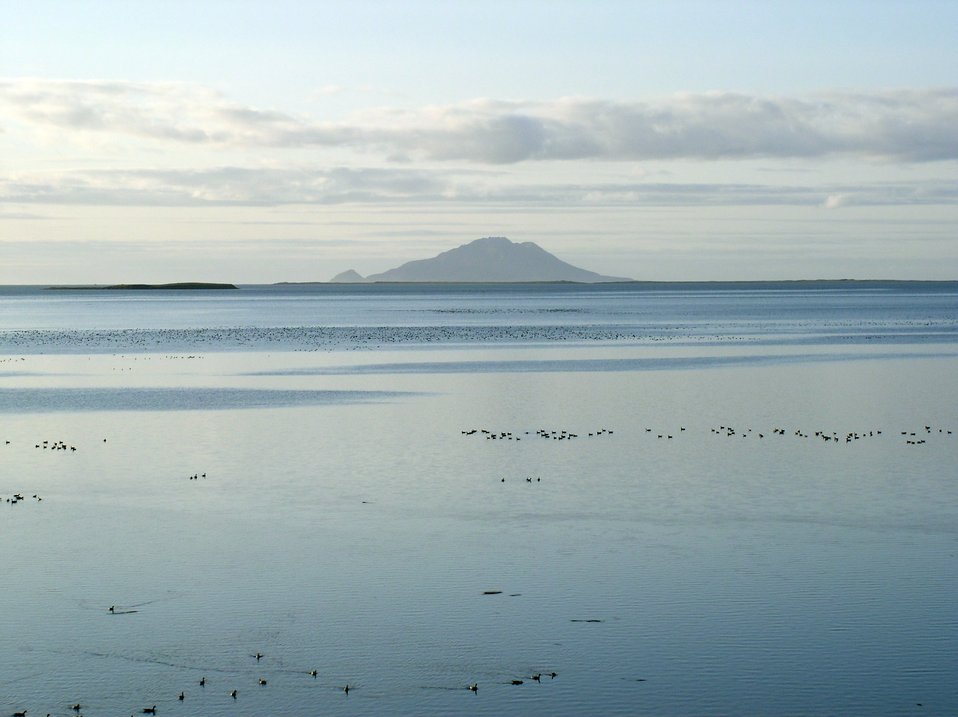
BrantandAmak

Brant in Izembek Lagoon, Izembek National Wildlife Refuge